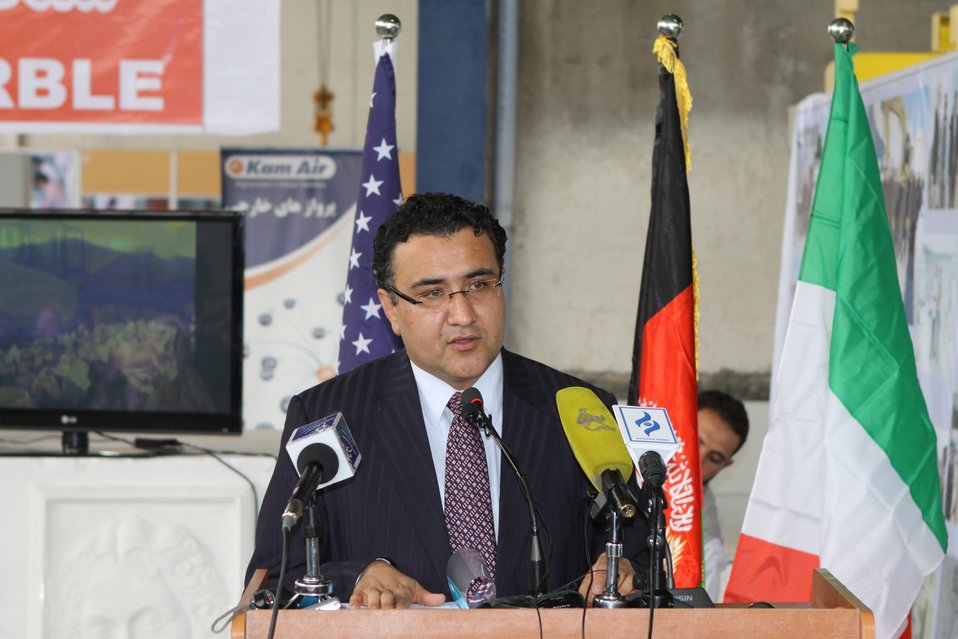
100525 Hirat Marble Conference 173